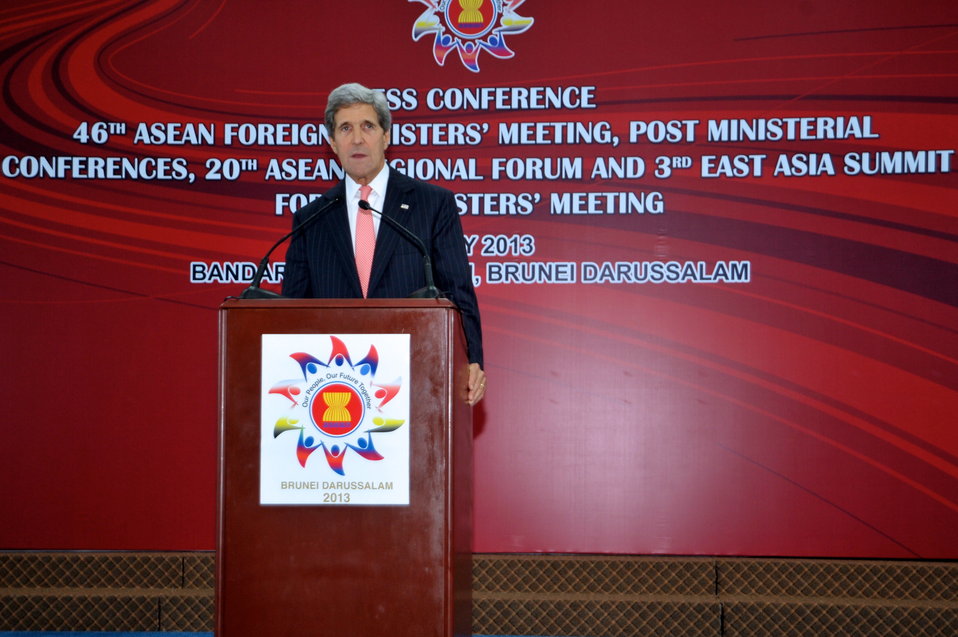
Secretary Kerry Holds a News Conference

U.S. Secretary of State John Kerry speaks at a solo news conference held during an ASEAN ministerial meeting in Bandar Seri Begawan, Brunei, on July 1, 2013.